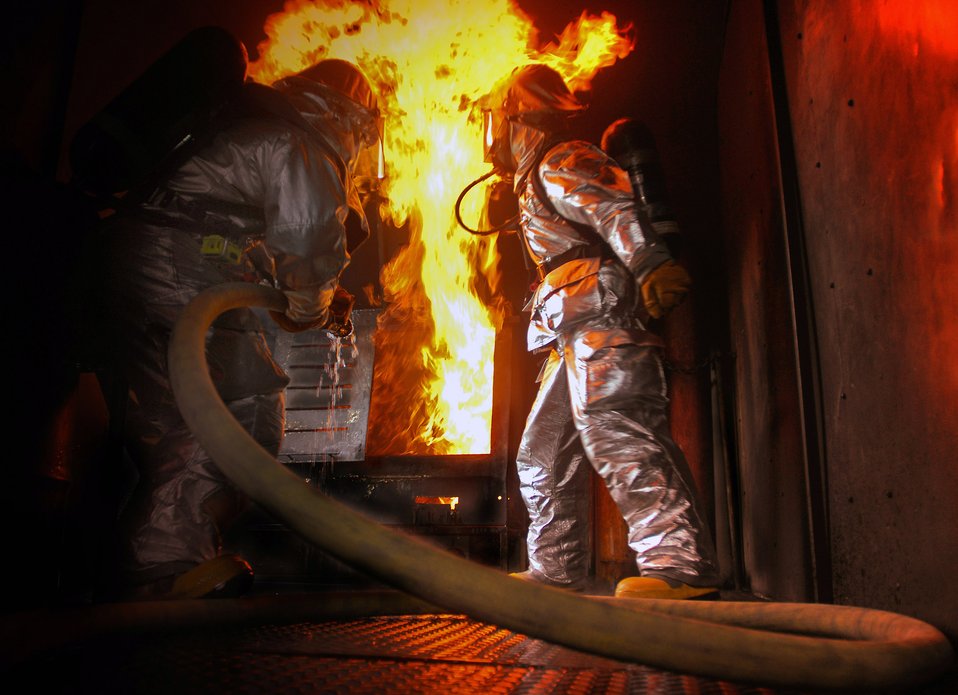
No entry

Staff Sgt. Jay Scott (left) and Airman Nathan Bragg extinguish a